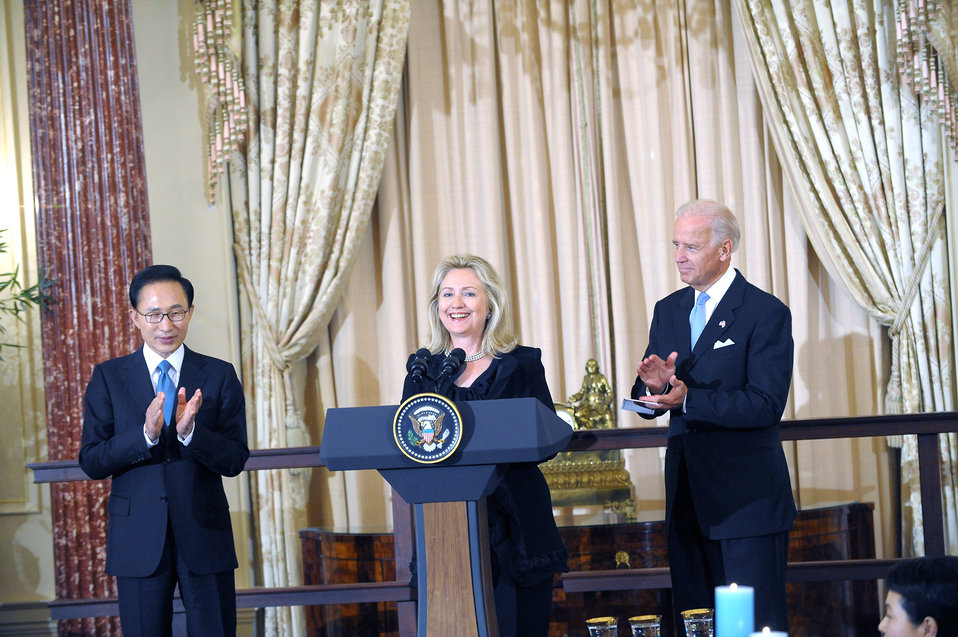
Secretary Clinton Delivers Remarks at State Luncheon

U.S. Secretary of State Hillary Rodham Clinton delivers remarks at the State Luncheon in honor of the state visit of Republic of Korea President Lee Myung-bak and Mrs. Kim Yoon-Ok, at the U.S. Department of State in Washington, D.C., on October 13, 2011. Also featured in the photo are Republic of Korea President Lee Myung-bak, left; and U.S. Vice President Joseph Biden, right.